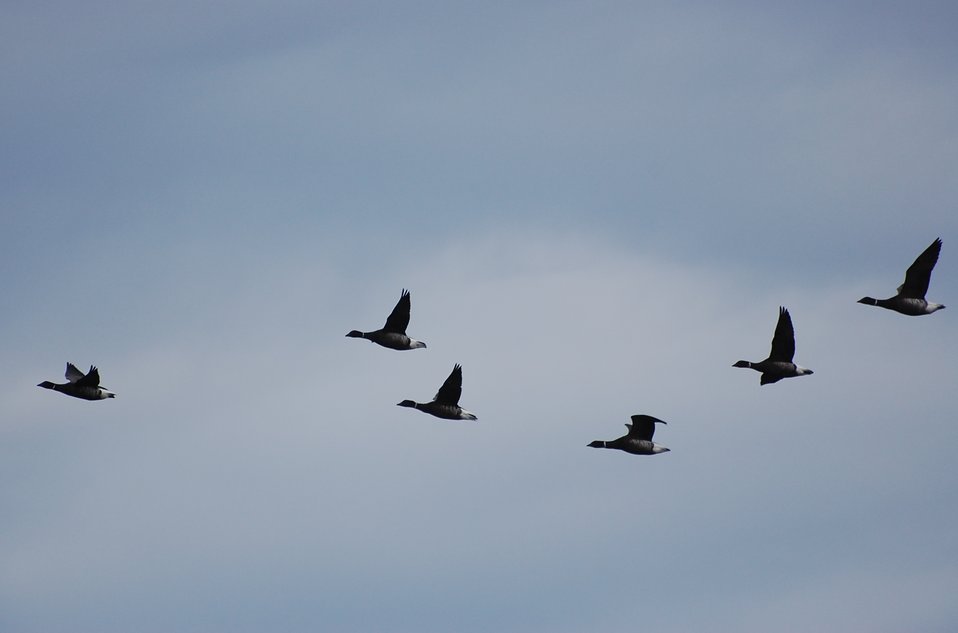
Brant at Izembek Lagoon

Izembek National Wildlife Refuge